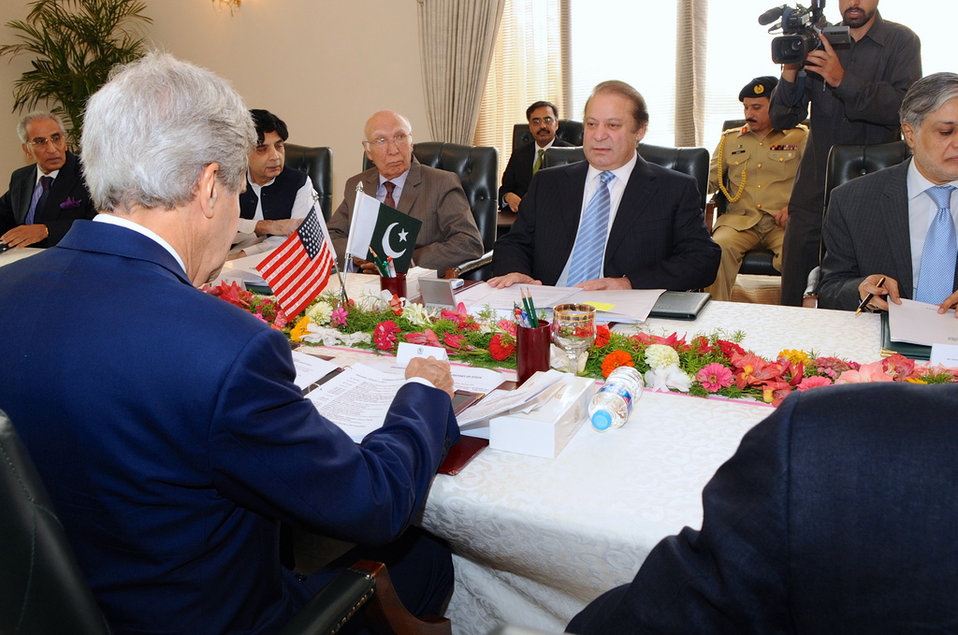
Secretary Kerry Meets With Pakistani Prime Minister Sharif

U.S Secretary of State John Kerry and Pakistani Prime Minister Nawaz Sharif prepare for a meeting with their respective staffs in Islamabad, Pakistan, on August 1, 2013.